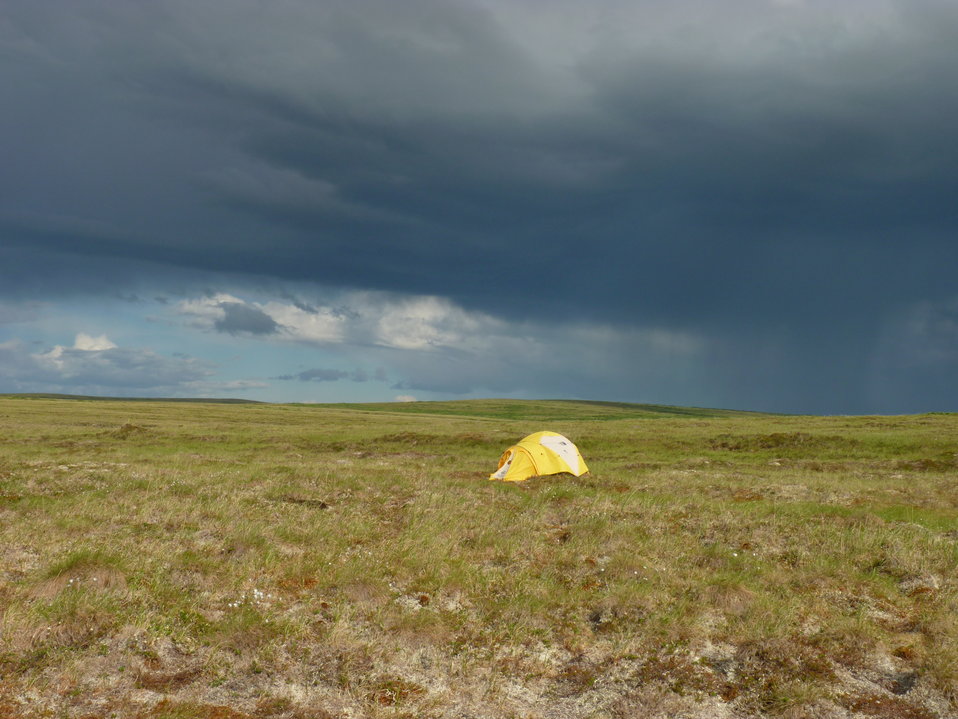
Andreafsky Wilderness, Yukon Delta National Wildlife Refuge